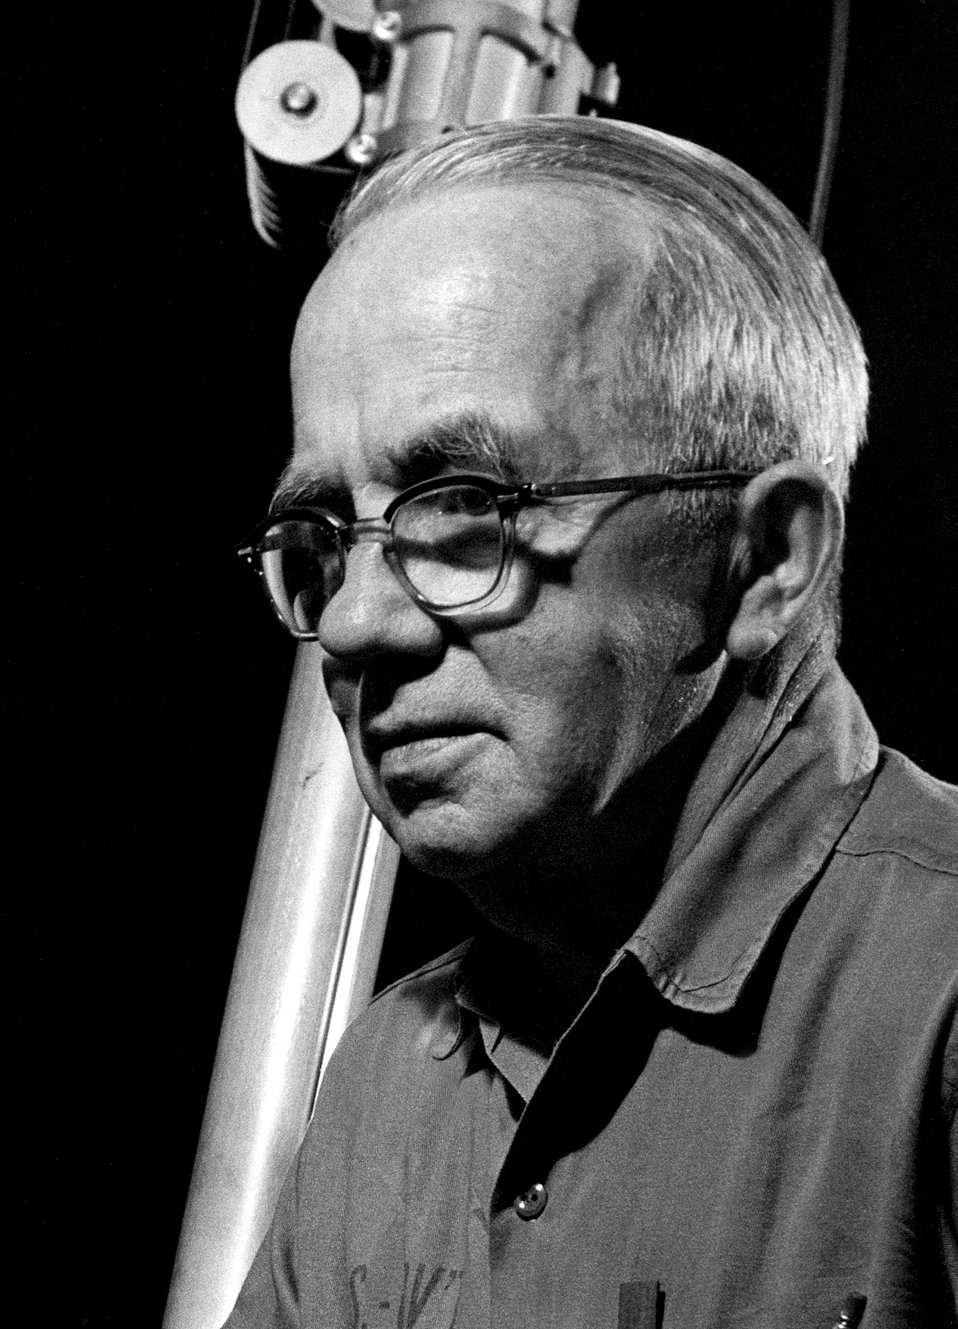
Otto Hillig.